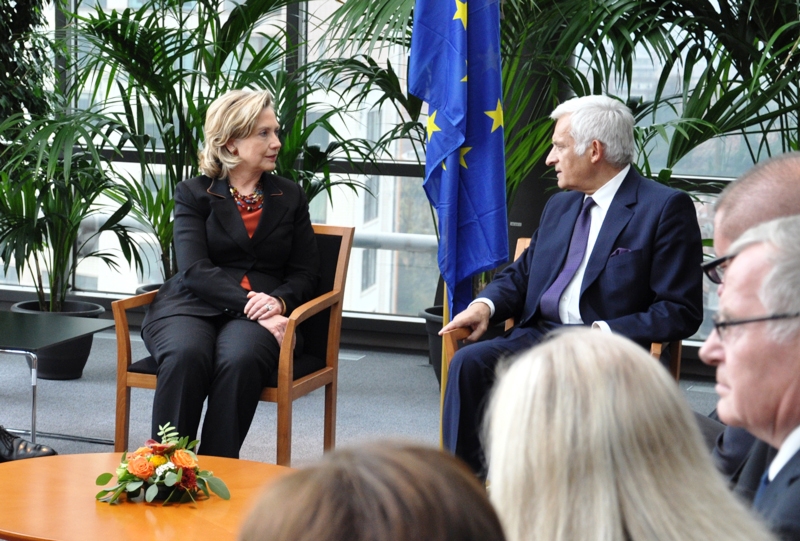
Secretary Clinton Speaks With European Parliament President Buzek

U.S. Secretary of State Hillary Clinton speaks with the President of European Parliament Jerzy Buzek in front of the Conference of Presidents on the top floor of the European Parliament building in Brussels, Belgium, on October 14, 2010.